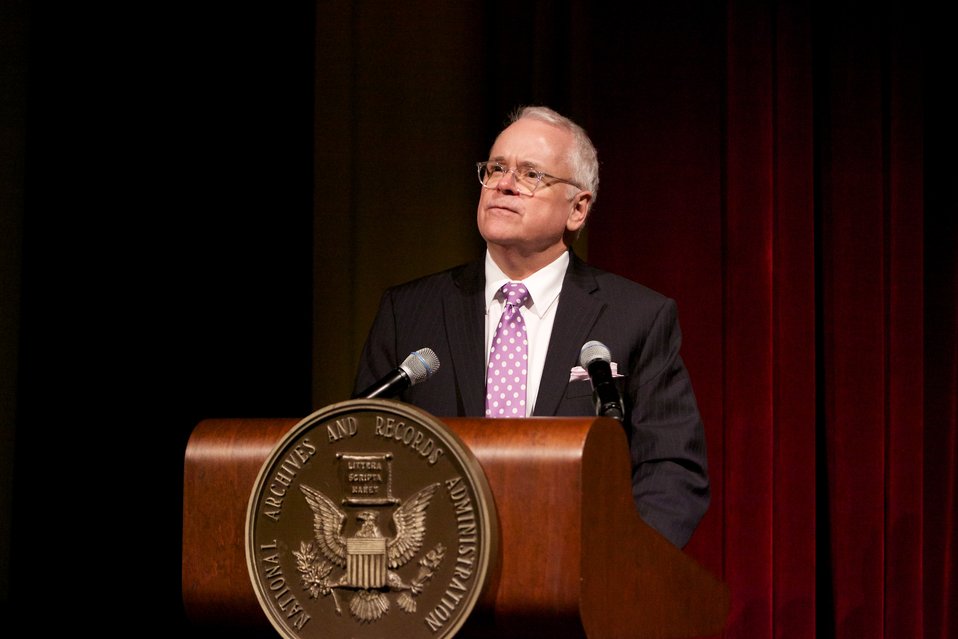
Freedom Summer